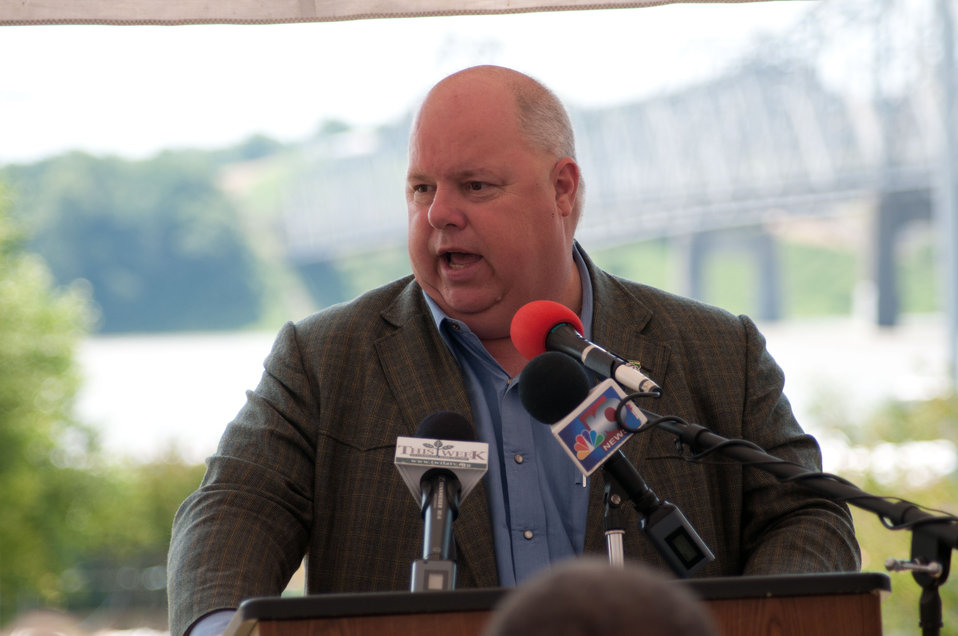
Louisiana Department of Agriculture and Forestry Commissioner Mike Strain, DVM spoke to producers, farmers and news media at the outreach event held on the Mississippi River levee at Vidalia, LA, on Thursday, May 19, 2011. In the background flood level waters flow under the Natchez–Vidalia Bridge that connects Natchez, Mississippi and Vidalia, Louisiana.